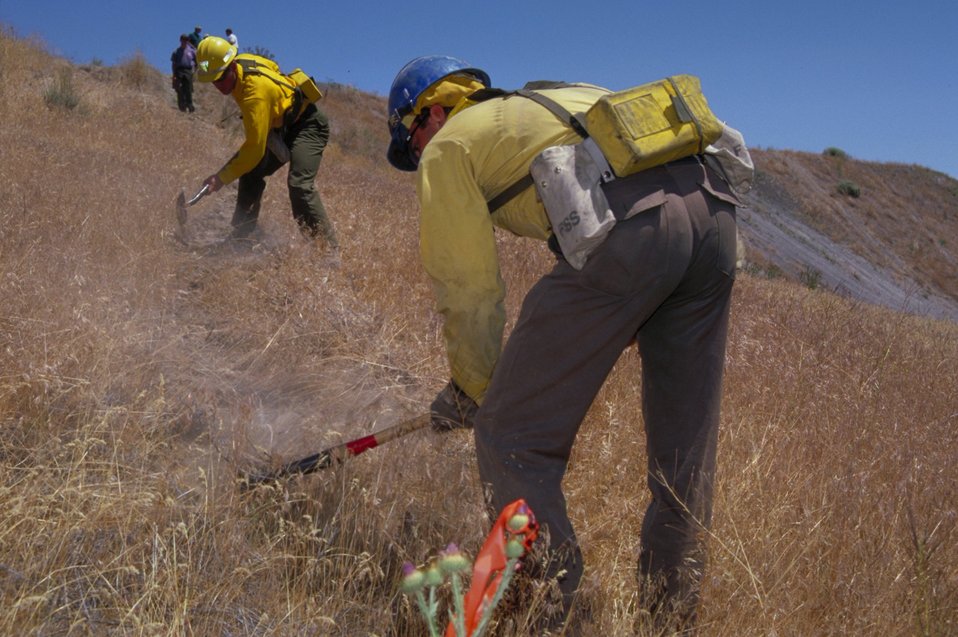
Fire fighter line crew Fire Season 2000 Lower Snake River District LSRD